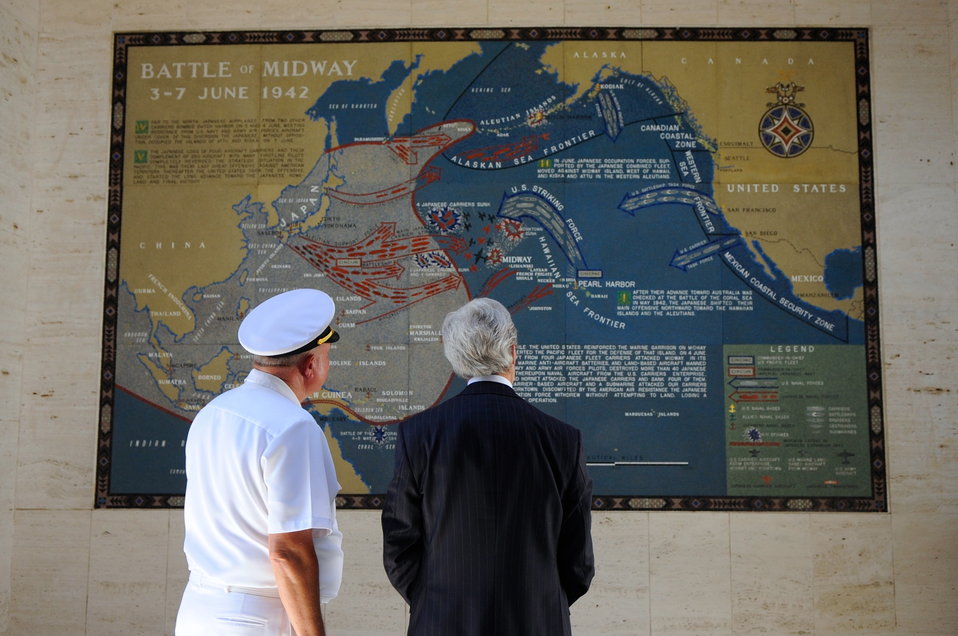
Secretary Kerry Examines a Battle Map at the Manila American Cemetery

Superintendent Larry Adkinson shows U.S. Secretary of State John Kerry a map of the Battle of Midway that is located at the Manila American Cemetery in Manila, Philippines, during a visit on December 17, 2013.